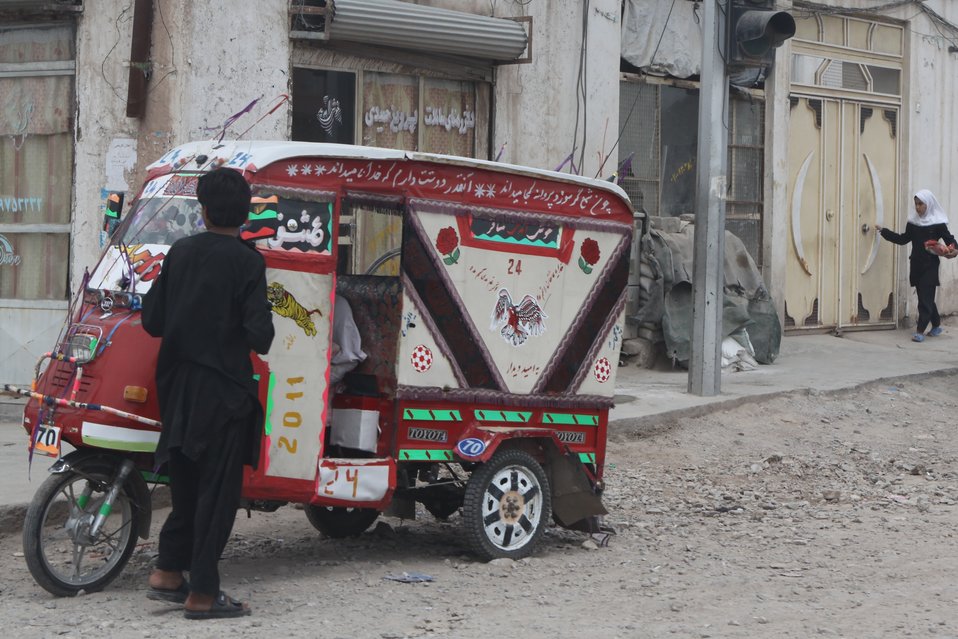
100525 Hirat Marble Conference 577